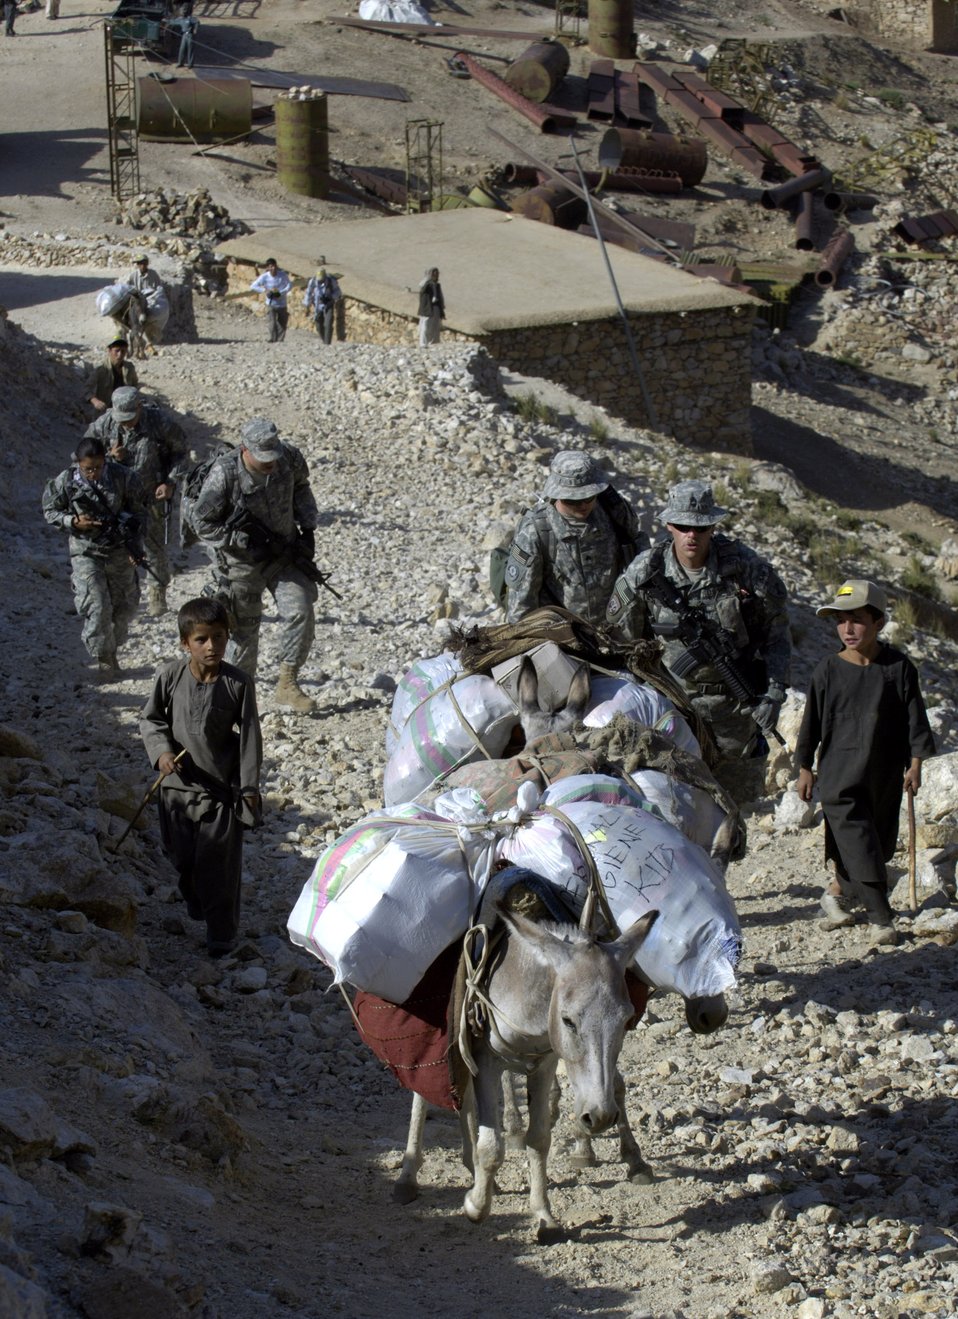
Airmen trek over mountains to deliver aid in Afghanistan

Donkeys loaded with medical supplies and humanitarian aid accompany members of the Panjshir Provincial Reconstruction Team Aug. 7 in Afghanistan. The PRT members made an 11-mile round-trip trek over a mountain pass and into a river valley to provide medical care to Afghans living in the Roydara village in the Shutol district of Panjshir province of Afghanistan. The Panjshir PRT stood up in 2005 and is directed by Ben Lowenthal from the U.S. State Department. Housed at Forward Operating Base Lion in the Hindu Kush mountains, the 40-member team interfaces with a population of approximately 300,000 Afghans spread across 1,393 square miles in six provinces.